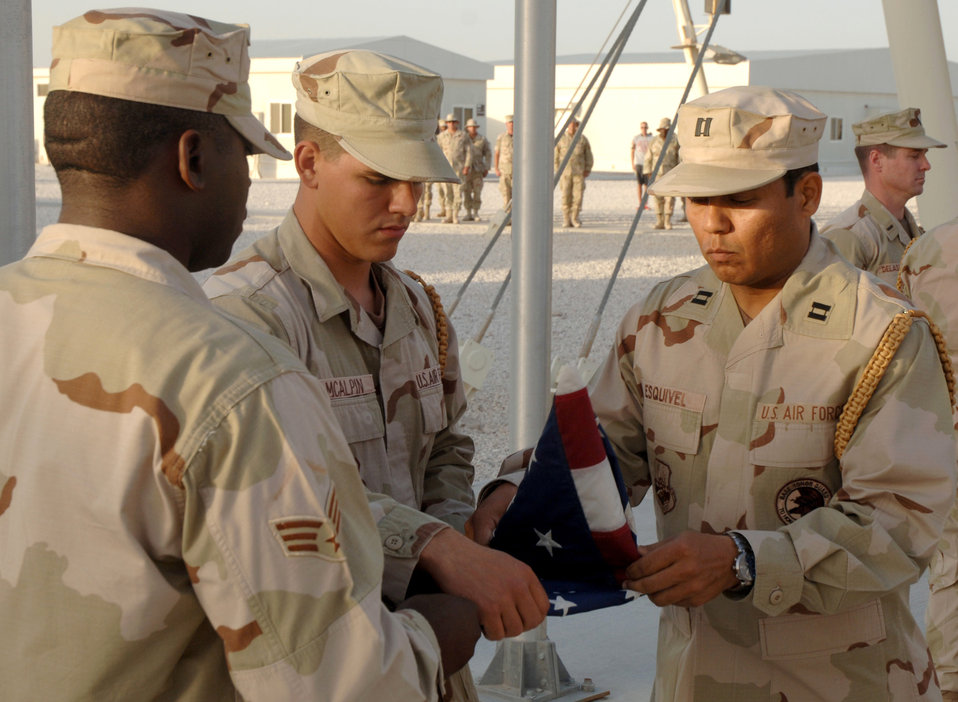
Desert honor guard

Members of the base honor guard fold the American flag during a retreat ceremony at a deployed location in Southwest Asia Friday, March 24, 2006. The honor guard provides honors and ceremonies for distinguished personnel, and posts the colors for change of command ceremonies, promotion ceremonies, parades and celebrations. They also render military funeral honors for active duty members who served honorably in the Air Force.